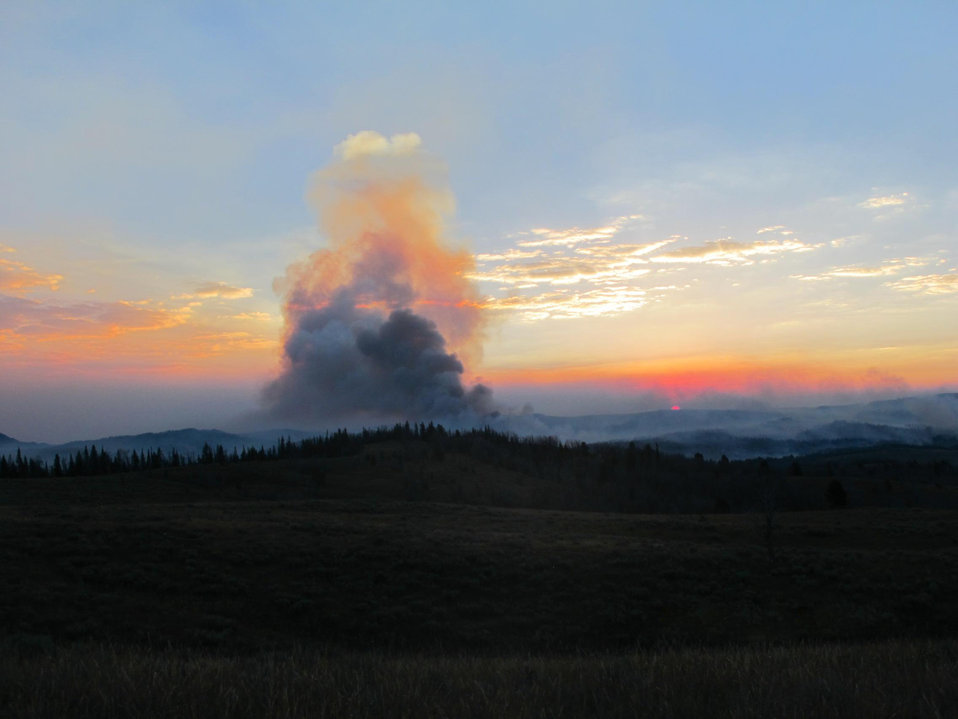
The Eureka Fire in the Beaverhead-Deerlodge National Forest near Ennis, MT began on Aug. 12 2013 by lighting has consumed approximately 6,468 acres and is 40% contained.